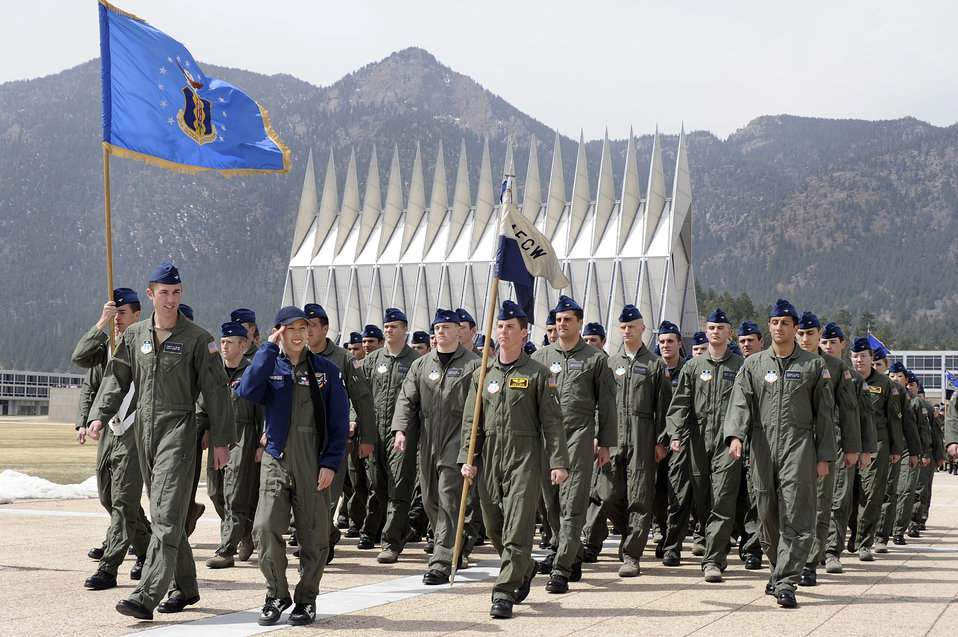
Clouds lift for 'Cadet for a Day'

Cadet for a Day Joe Hayford leads cadet squadron 4 at the noon meal formation at the U.S. Air Force Academy. Cadet Hayford's three-day visit included numerous events sponsored by the cadet squadron, and organized by the Make-A-Wish foundation.